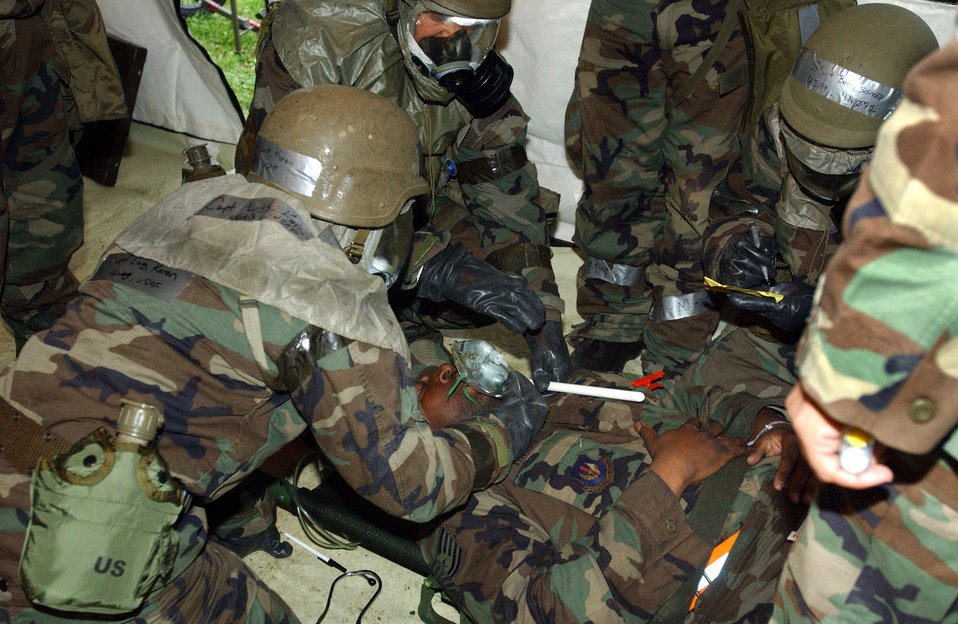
Medics train to be combat-ready

Medical specialists treat a